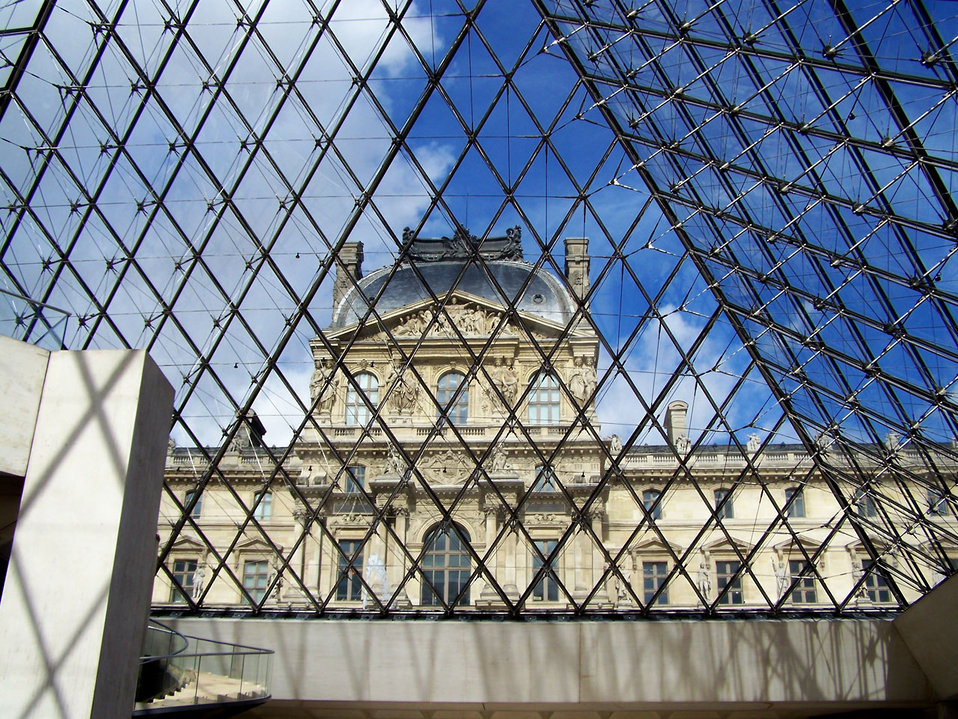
The louvre, paris, france.